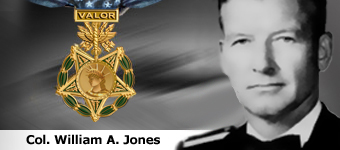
Col. William A. Jones, Medal of Honor recipient .